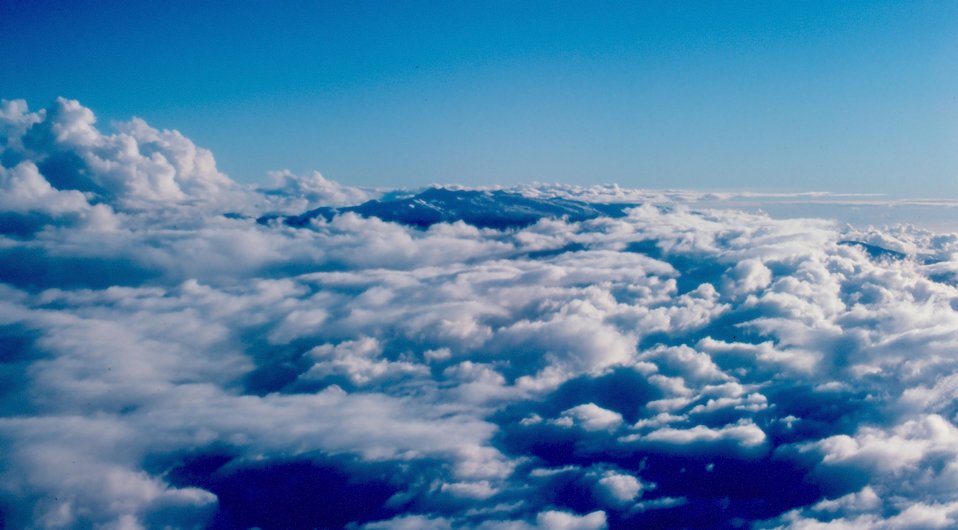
Maui peaking through the clouds as seen from aircraft.